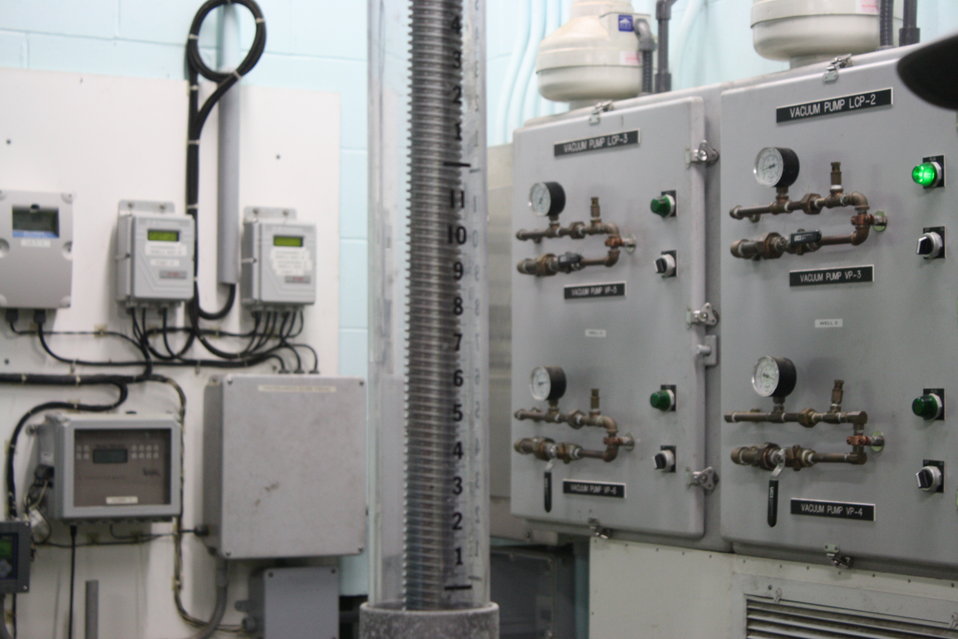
Nashua National Fish Hatchery welcomes regional office employees

Viewing the pump house water filtration system.